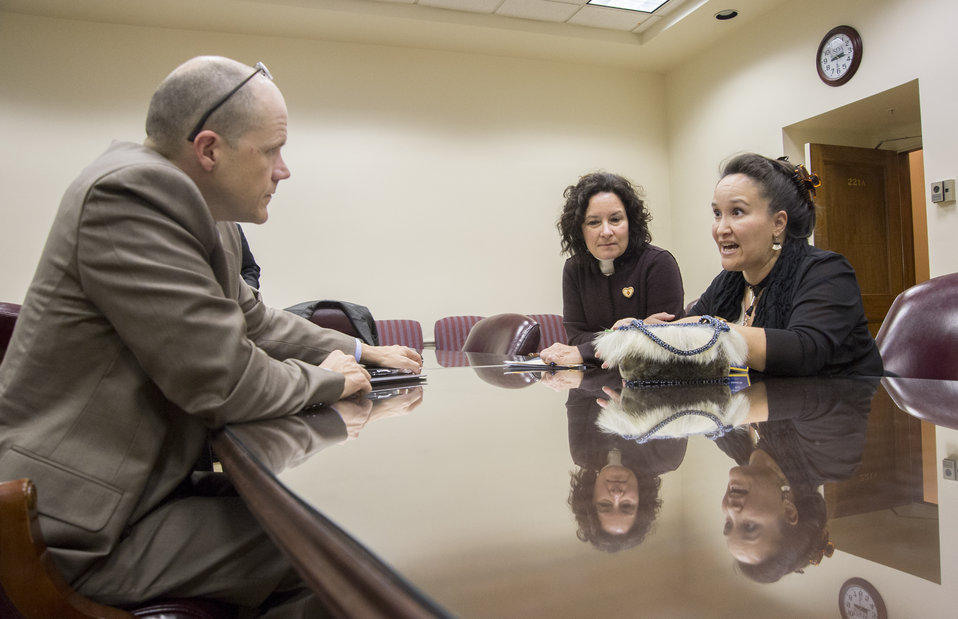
(L to R) U.S. Department of Agriculture (USDA) Acting Under Secretary Rural Development (RD) Doug O’Brien and USDA Deputy Under Secretary RD Patrice Kunesh speak with North Star Group, D.C. Government and Community Affairs Senior Advisor Amy Sparck Dobmeier at a roundtable discussion on Agriculture, Community and Economic Development Opportunities in Indian Country with Agriculture with tribal leaders at USDA in Washington, D.C. on Tuesday, Nov. 12, 2013.